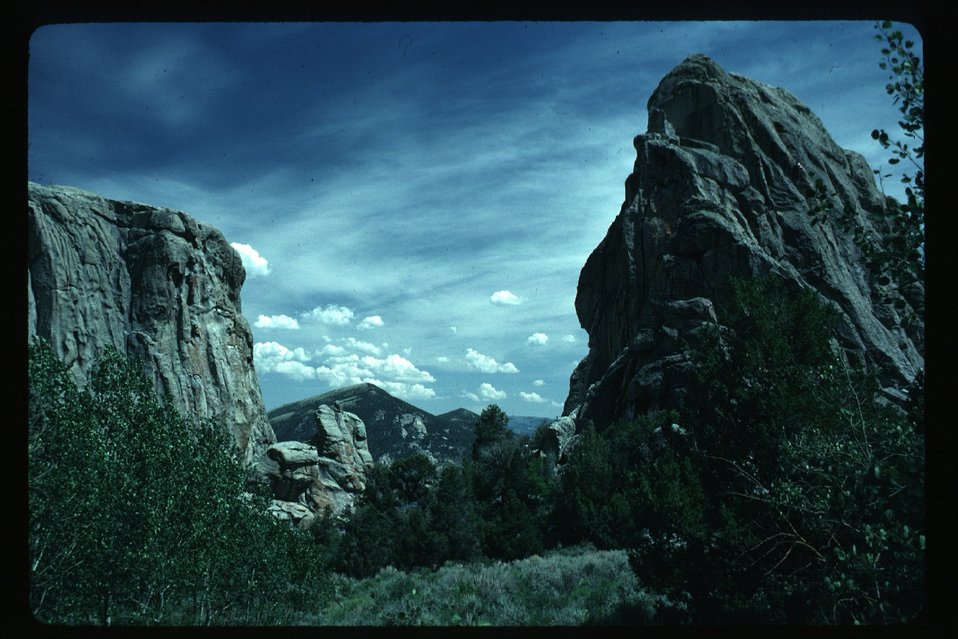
Rock climbing Burley City of Rocks Burley Field Office USRD Upper Snake River District